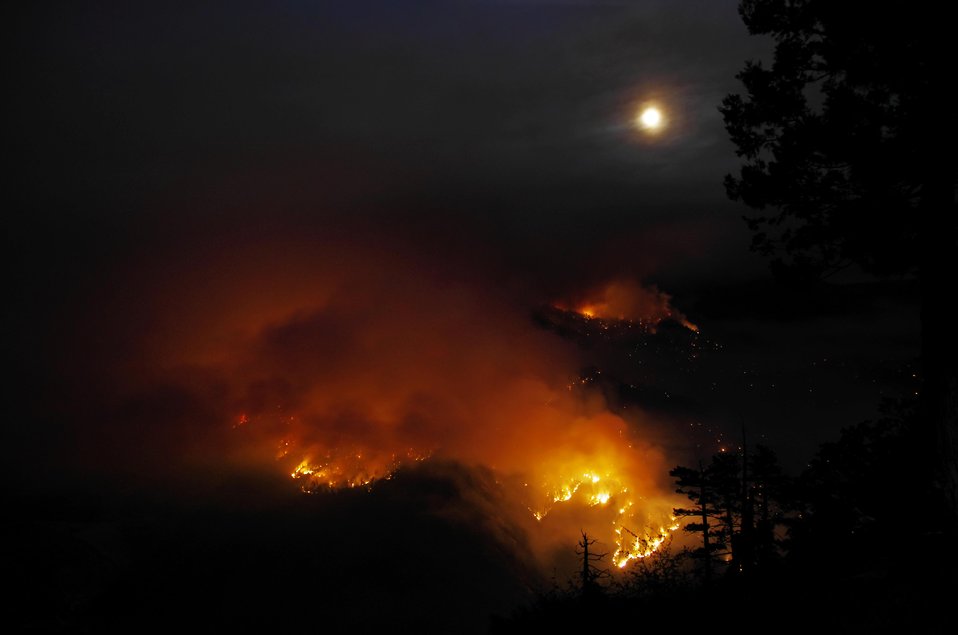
The Aspen Fire burns at night from Mile High Curve. The Aspen Fire in the Sierra National Forest near Big Creek, CA began on Jul. 22, 2013 by lightning and has consumed approximately 20,252 acres and is approximately 70% contained.